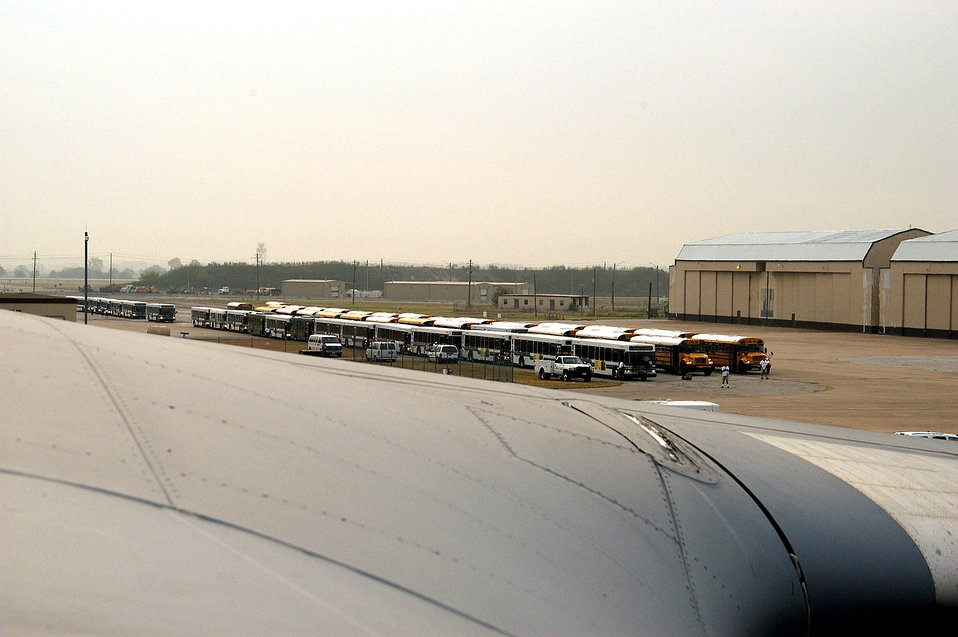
Humanitarian mission

AUSTIN, Texas -- Dozens of buses line up outside awaiting an arriving C-17 Globemaster III aircraft carrying evacuees from New Orleans who are victims of flooding caused by Hurricane Katrina. Here, the evacuees were given food, fresh water and a place to sleep.